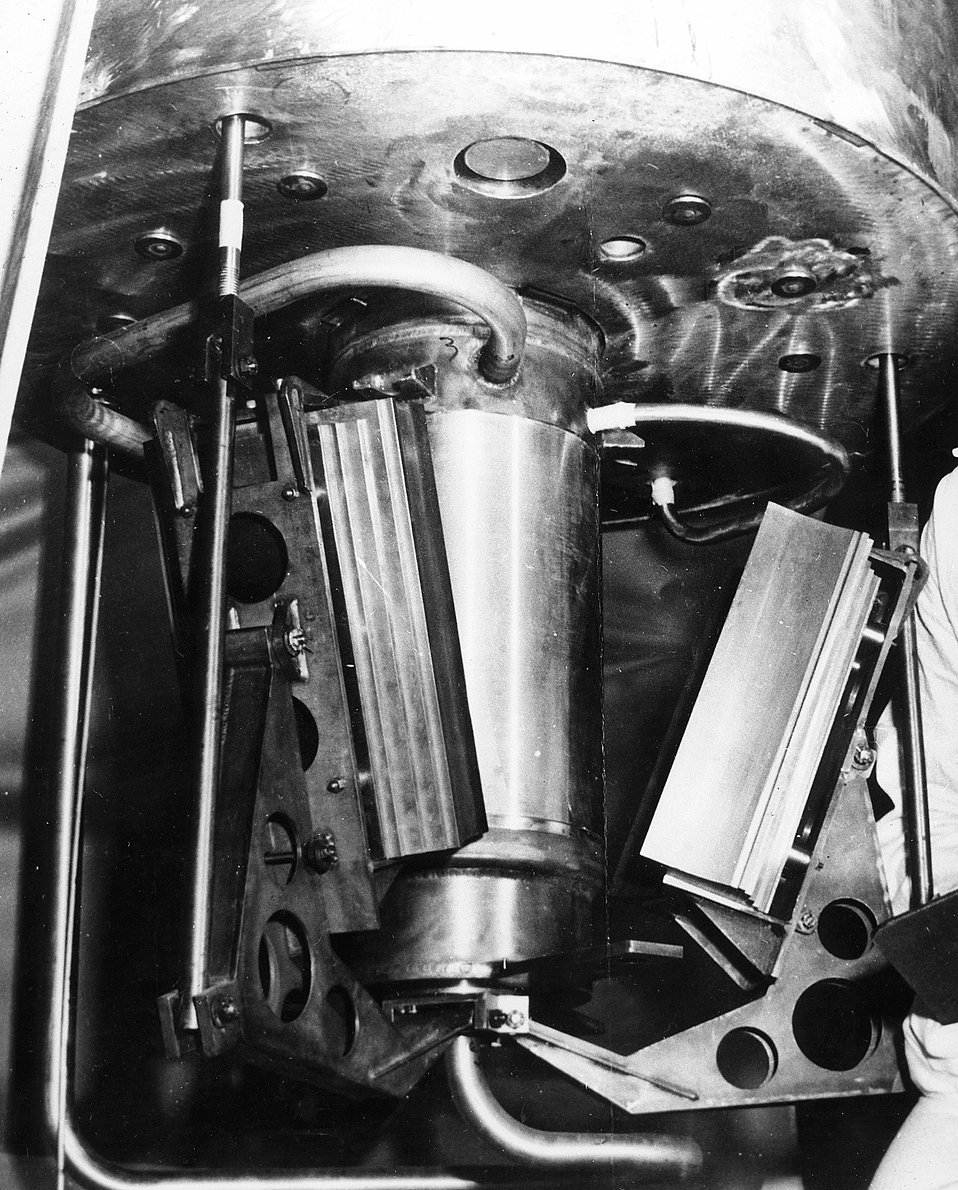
SNAP 2 SPACE VEHICLE- Developed of a light-weight, high-temperature, reactor to power instruments and radios in space satellites.